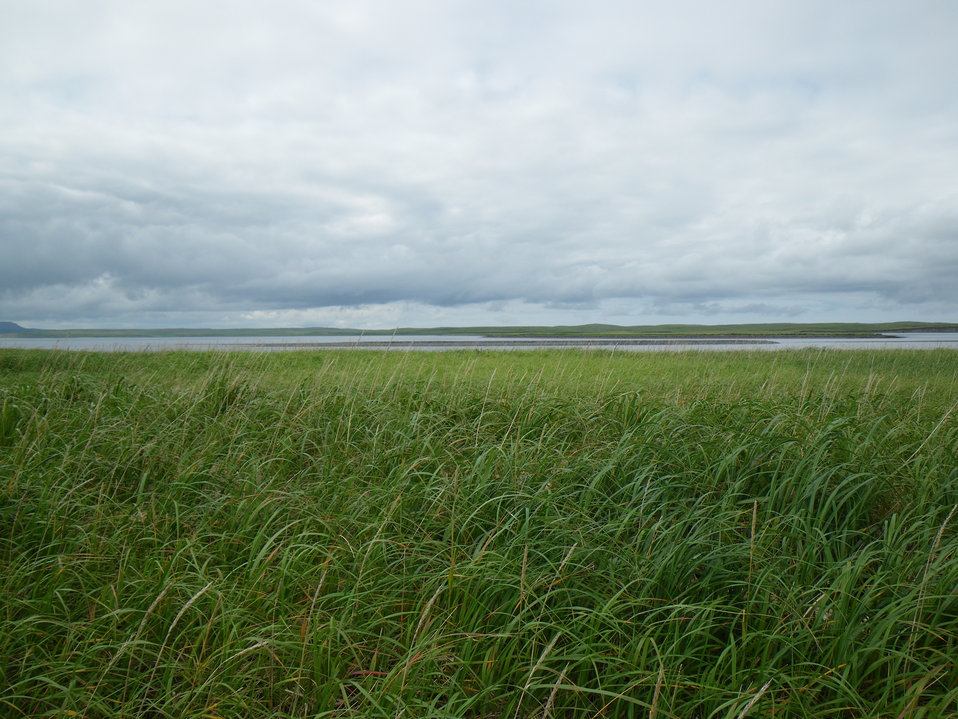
Elymus grass

Kinzarof Lagoon barrier island, Izembek National Wildlife Refuge